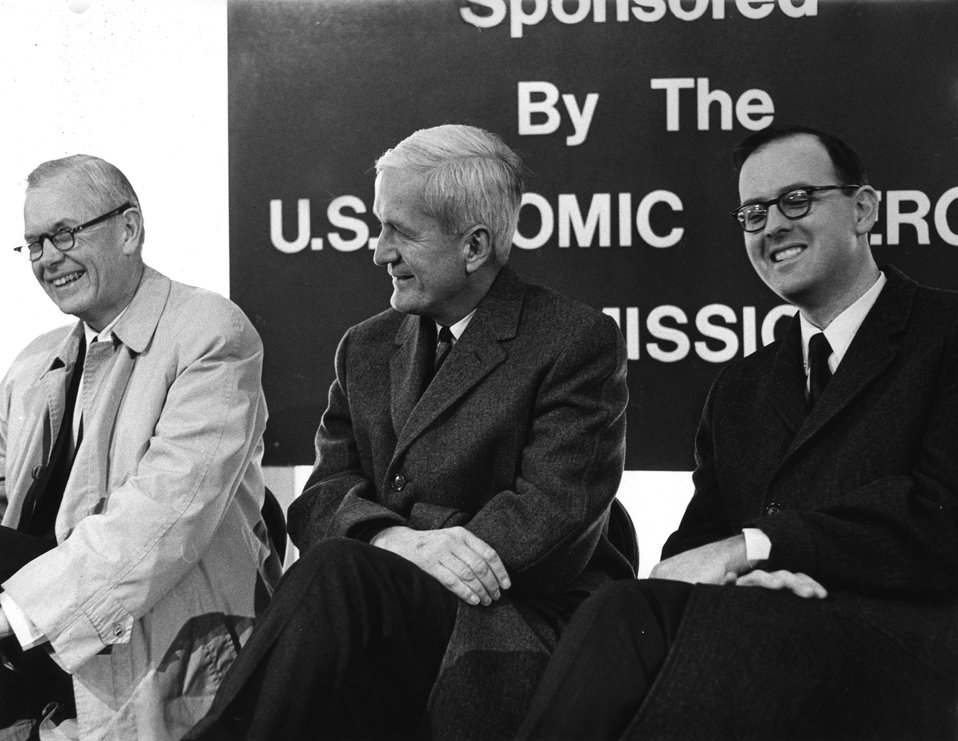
Gerald Tape, Commissioner, AEC; Norman Ramsey, President, Universities Research Association, Inc. and the Higgins Professor of Physics, Harvard University; and James Sanford, Brookhaven National Laboratory, Chairman, NAL Users Organization.